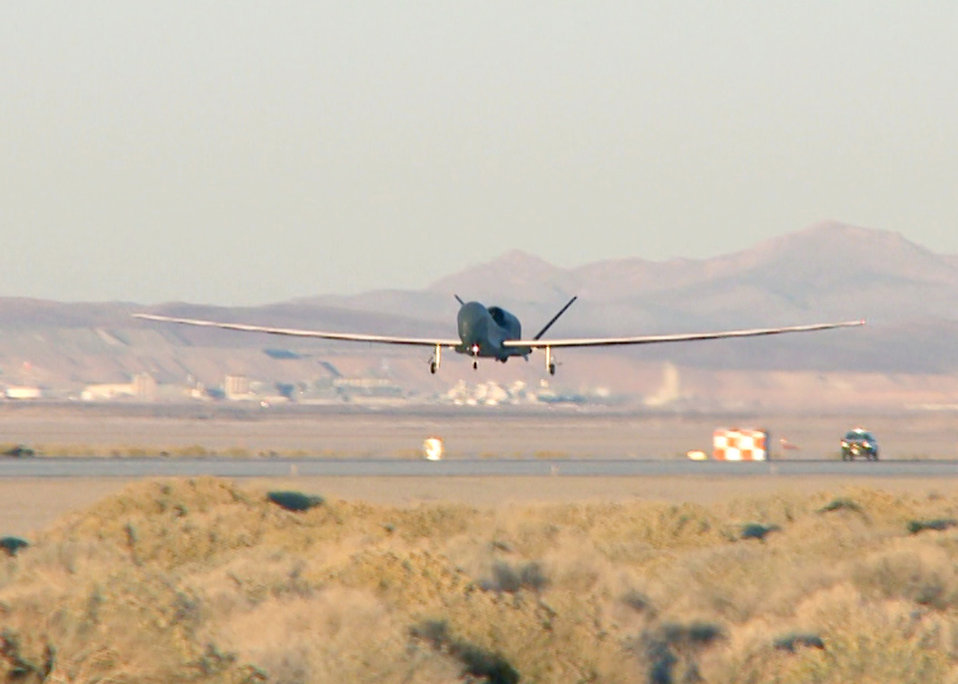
RQ-4 Alternative Fuel

An RQ-4 Global Hawk, like the one pictured here, completed a 32-hour flight test using an alternative fuel mixture, Nov. 23, 2010 at Edwards Air Force Base, Calif. The remotely-piloted aircraft is the last platform to be tested for certification to use Fischer-Tropsch Synthetic Paraffinic Kerosene fuel.